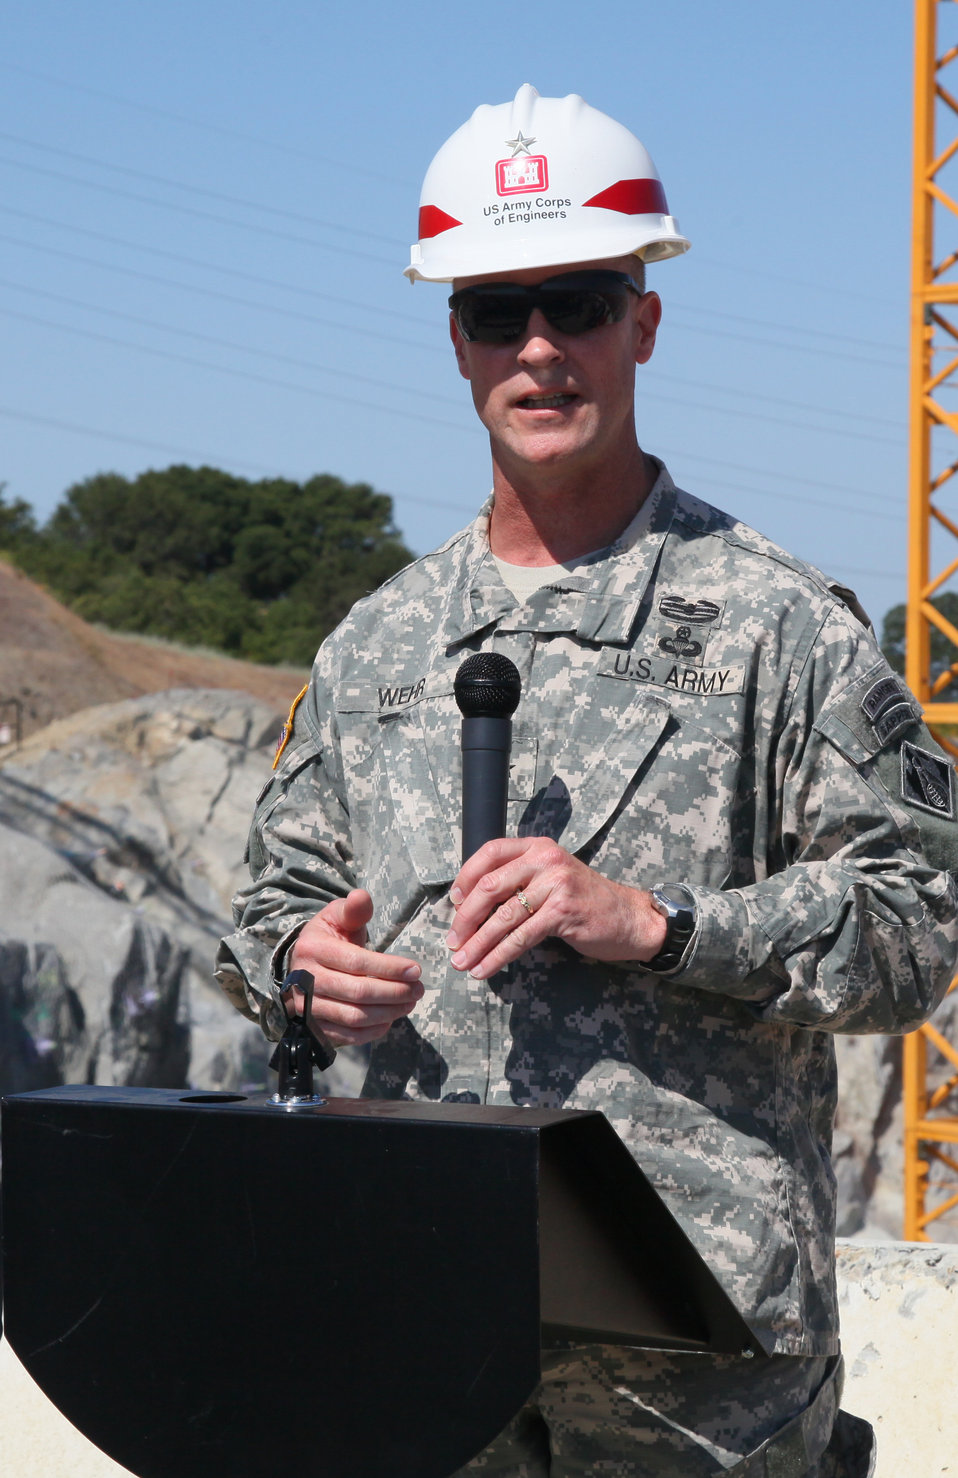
First concrete ceremony for Folsom Dam spillway

U.S. Army Corps of Engineers South Pacific Division commander, Brig. Gen. Mike Wehr, addresses the crowd at a ceremony commemorating the first concrete placement for the auxiliary spillway control structure at Folsom Dam in Folsom, Calif., May 24, 2012. The Corps, together with the U.S. Bureau of Reclamation and state and local partners, is building the spillway to reduce flood risk throughout the Sacramento region.